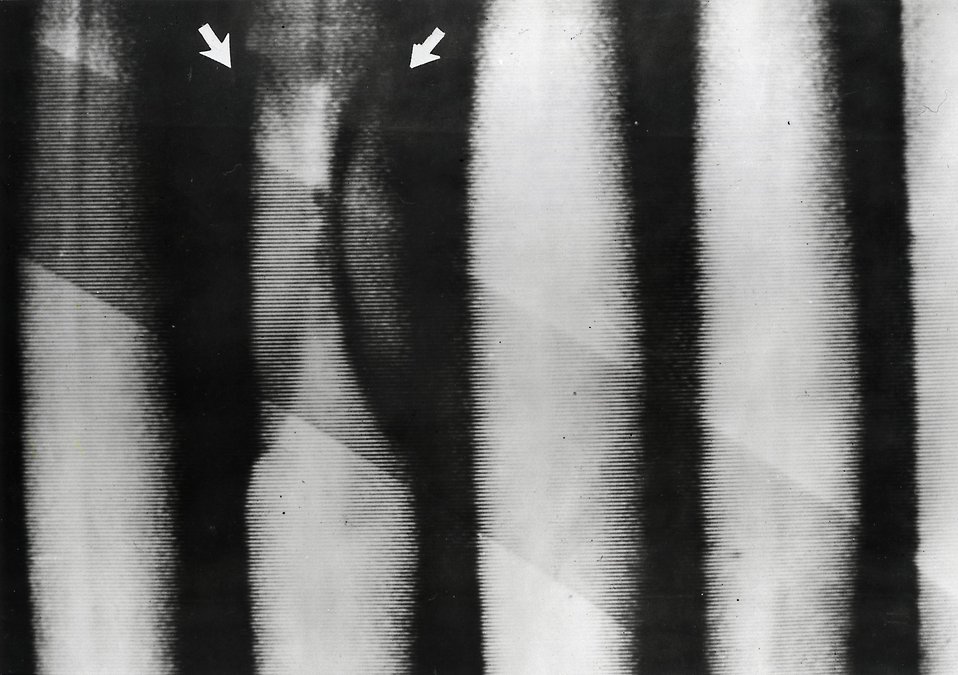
In May, 1972, the Rochester Gas and Electric Company informed the AEC that a routine inspection during refueling operations at it's Ginn Nuclear in Wayne County. Circa 1973.